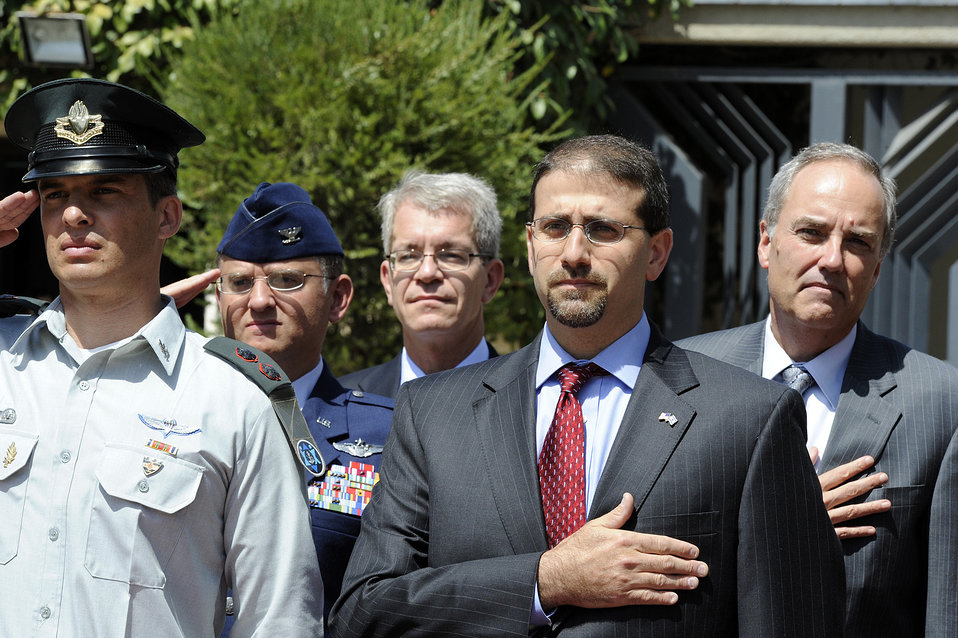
Ambassador Shapiro Prepares To Present His Credentials

U.S. Ambassador to Israel Daniel B. Shapiro prepares to present his credentials to Israeli President Shimon Peres at the President's residence in Jerusalem on August 3, 2011.